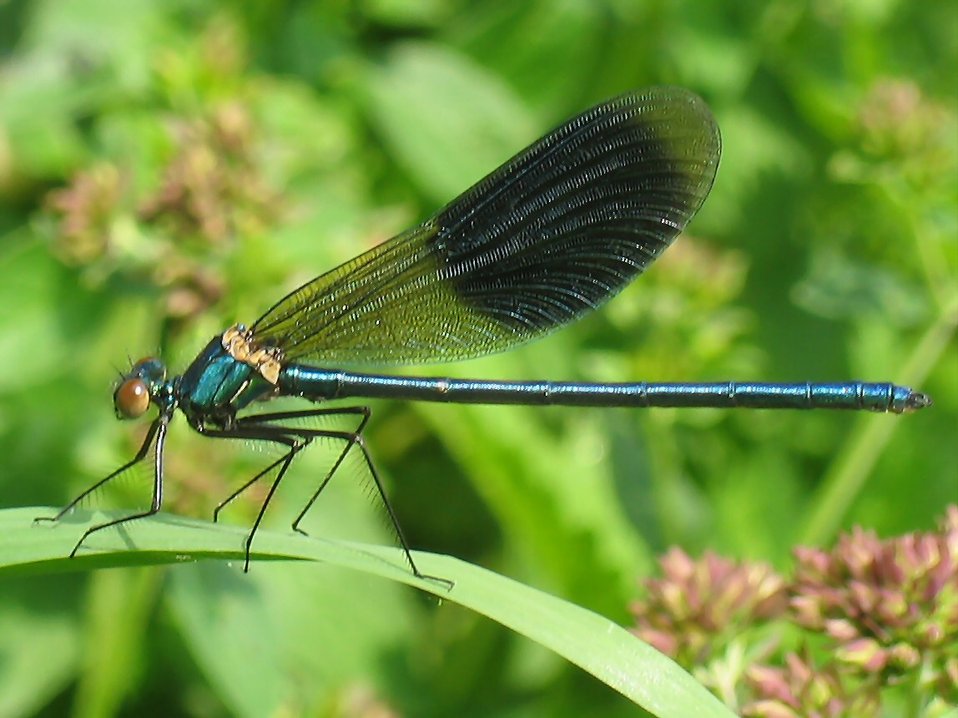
Calopteryx splendens male